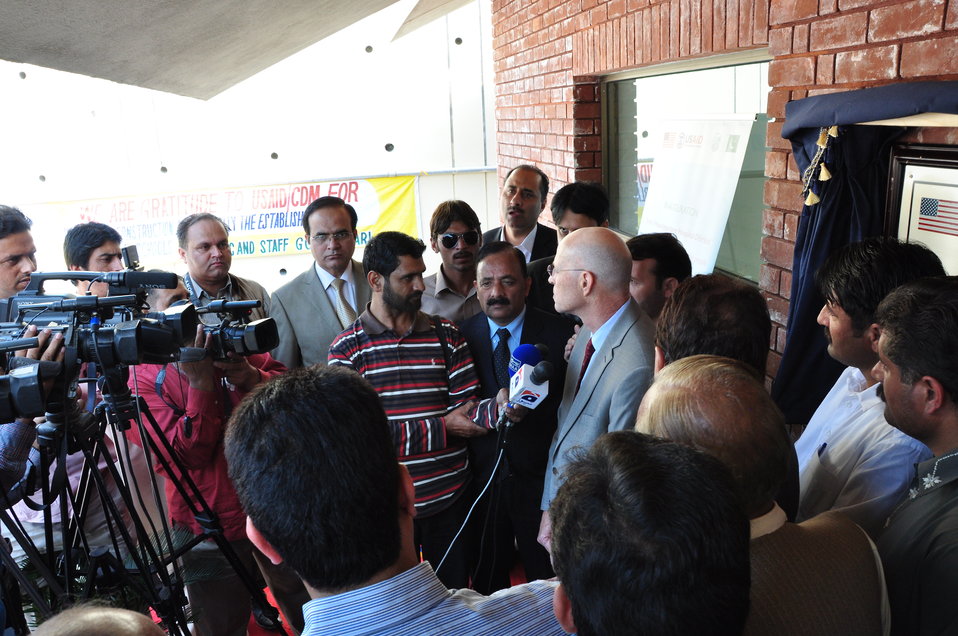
Dhirkot Reconstructed Hospital Inauguration Pakistan Reconstruction Program 02